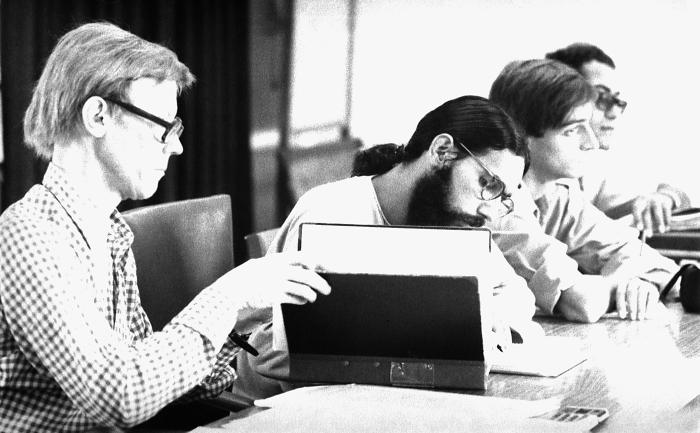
During the Bangladesh smallpox eradication project, in order to maintain a consistent understanding amongst eradication team members as to the progress that was continually being achieved, monthly staff meetings were held. At the meeting pictured here, panel members included (left to right) B. Olaf Ringertz, Swedish epidemiologist; Jason Weisfeld, American epidemiologist; Bert van Ramshorst, Dutch epidemiologist; and an unidentified Egyptian epidemiologist. The significance of this transcends the obvious, but showed how the world population came together in its attempt to once and for all rid mankind of this horrible viral disease.